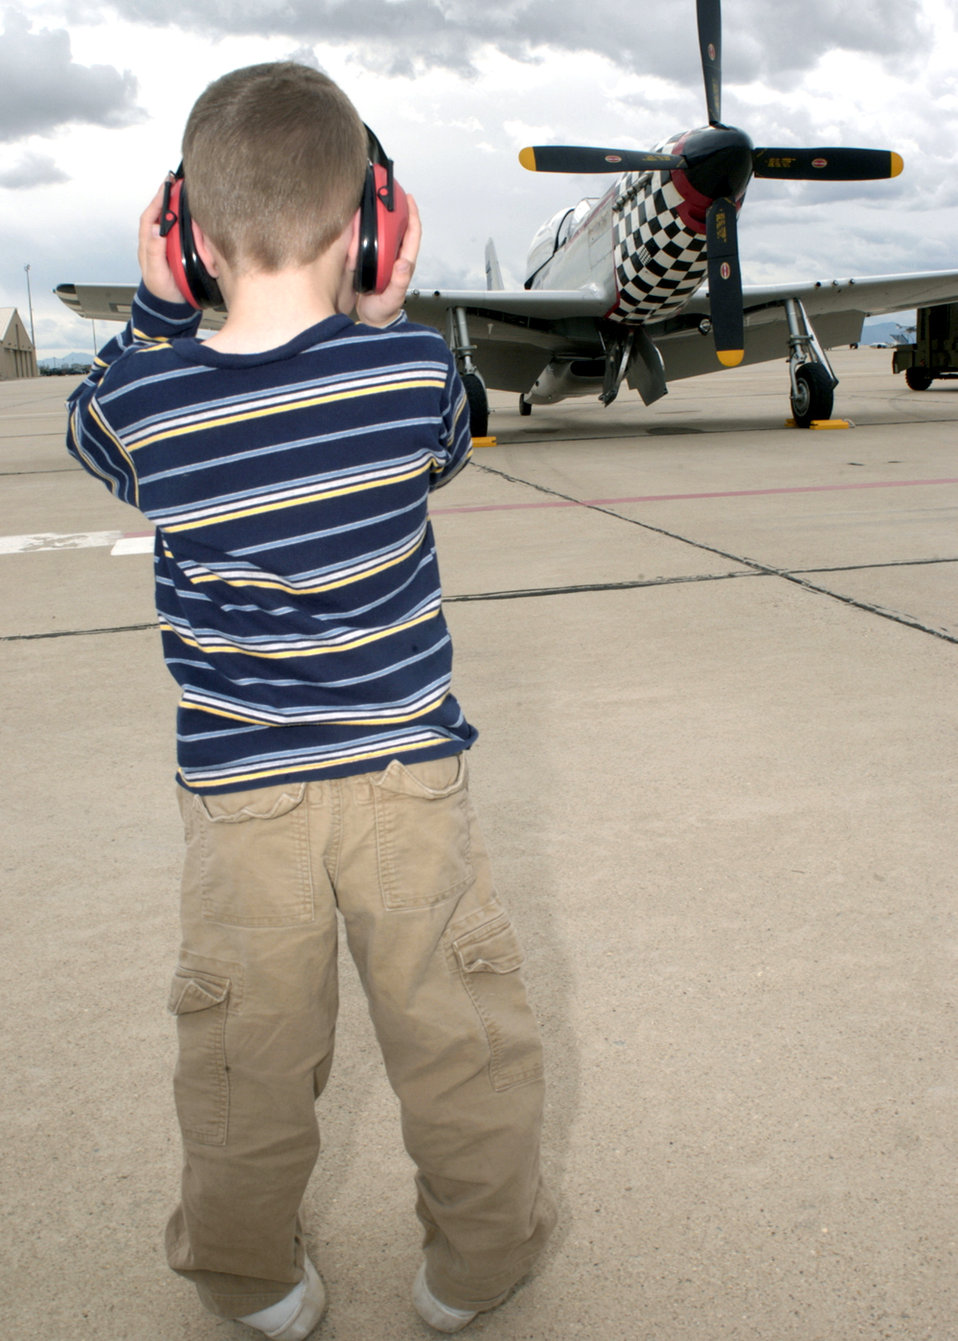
I can't hear you

DAVIS-MONTHAN AIR FORCE BASE, Ariz. -- Caleb Mann protects his ears while getting a look at a P-51 Mustang during the 2005 Heritage Flight Conference here. The Heritage Flight program was established in 1997 supporting the Air Force's 50th anniversary. It involves today's state-of-the-art fighters flying in close formation with World War II and Korean War vintage fighters. The flight is designed to safely display the evolution of U.S. Air Force airpower and support Air Force's recruiting and retention efforts.